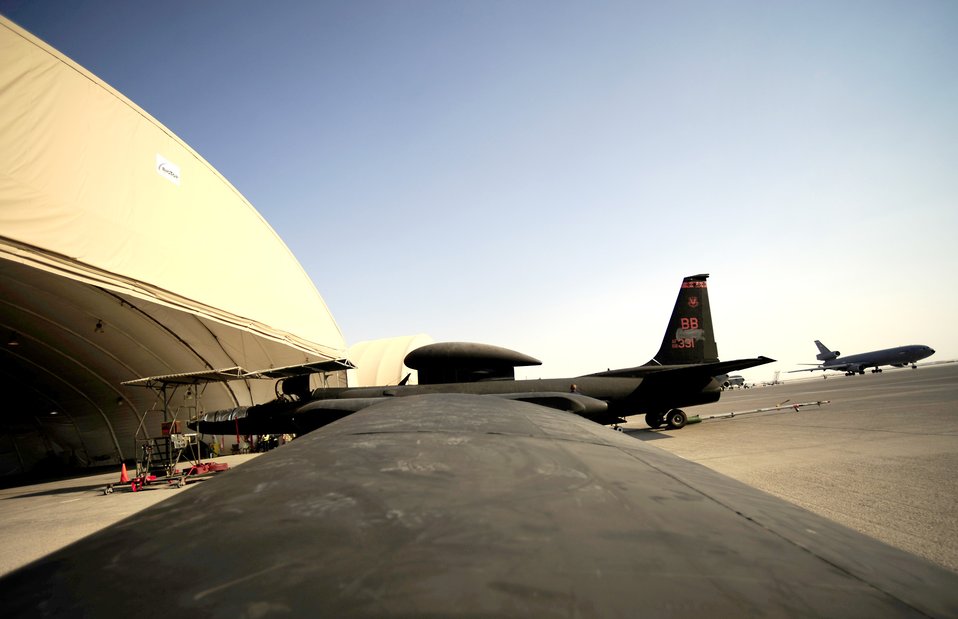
Technicians work on the Dragon Lady

A U-2 Dragon Lady waits for maintenance crews Nov. 23, 2010, at an air base in Southwest Asia. The Airmen are assigned to the 380th Expeditionary Aircraft Maintenance Squadron.